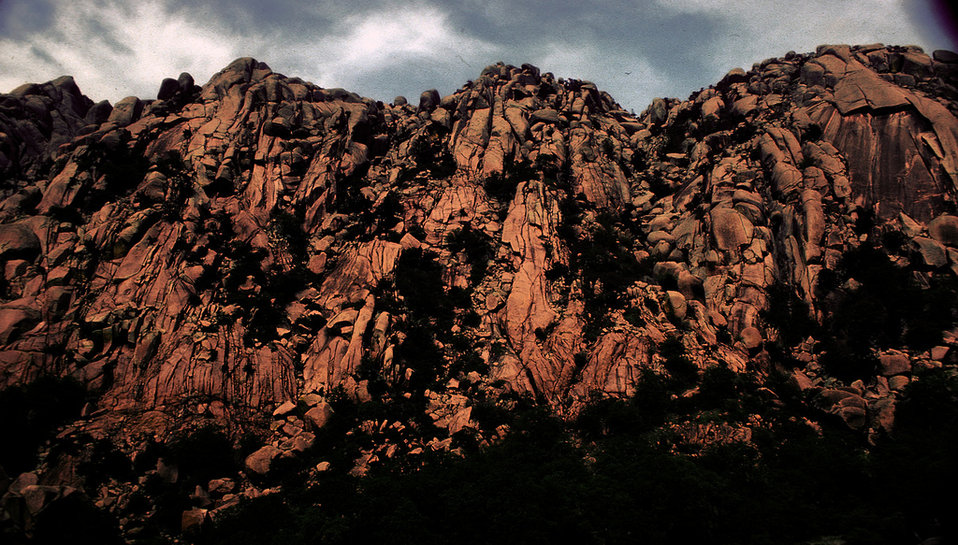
ancient rocks and ridges, Wichita Mountains Refuge

Wichita Mountains National Wildlife Refuge, OK
Photo: Daniel McLean, Creative Commons
In 1905 Congress recognized the importance of the Wichita Mountains' ancient geological formations and wildlife, creating the Wichita Mountains Forest Reserve and Game Preserve - later a national wildlife refuge.